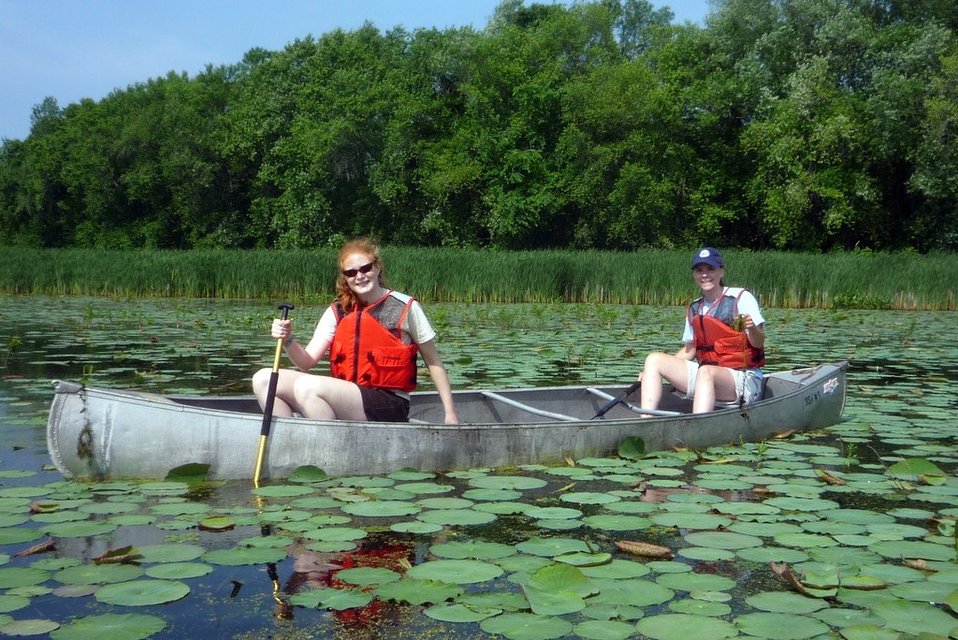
Pulling invasive species

Interns pull invasive species at the Eastern Massachusetts National Wildlife Refuge Complex.